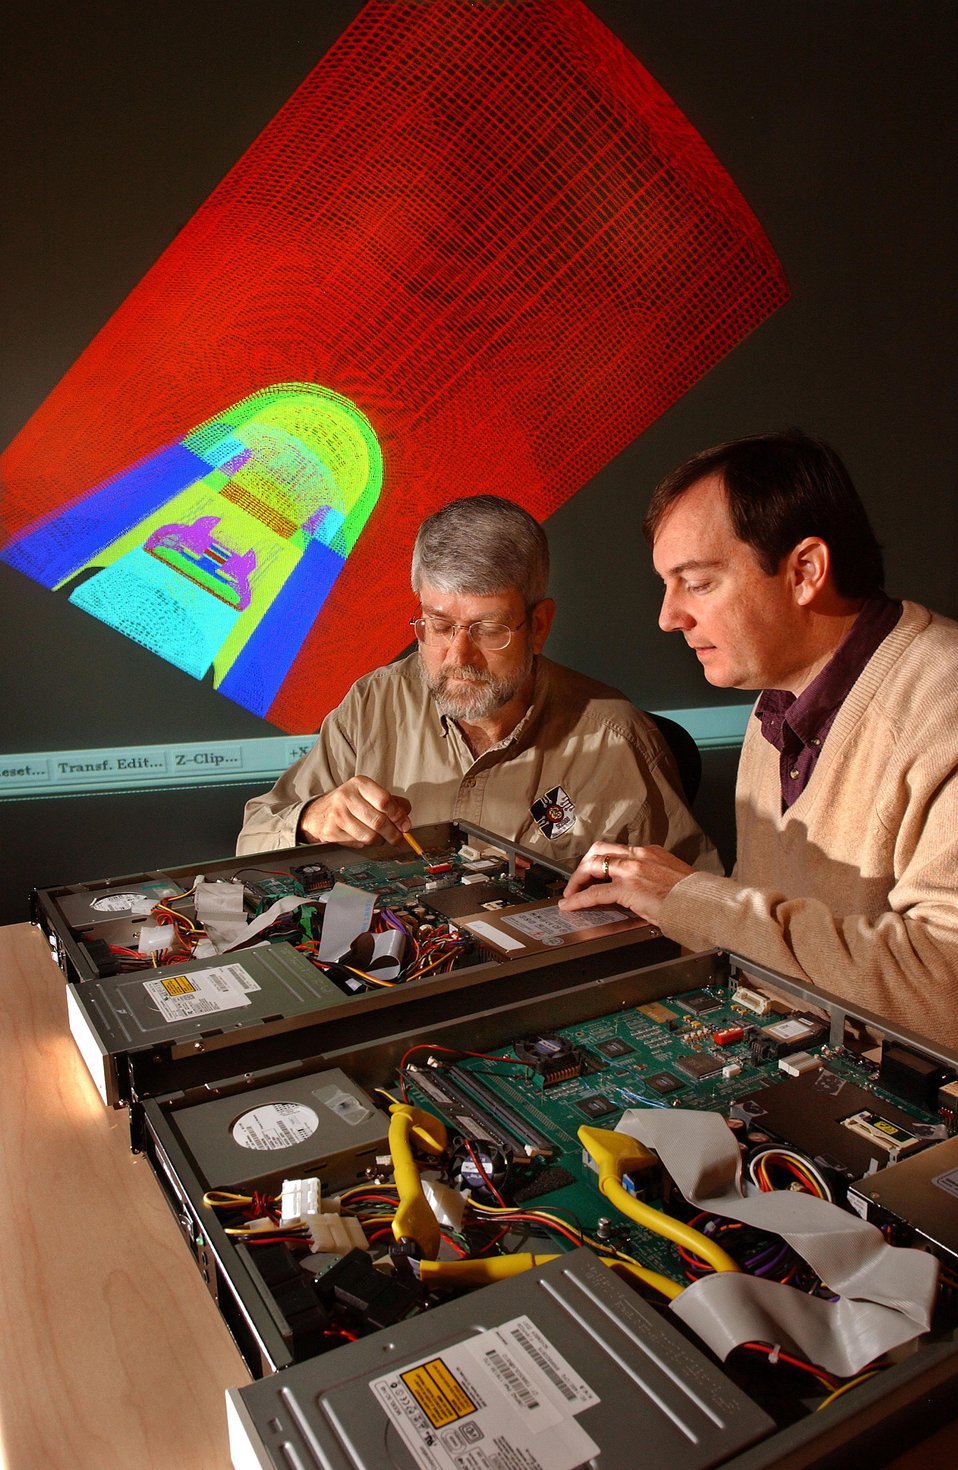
BE THERE NOW HARDWARE DEVELOPED AT SANDIA NATIONAL LABORATORIES.

SNL SCIENTISTS EXAMINE A VIDEO ENCODER AND DECODER, PART OF INTERACTIVE REMOTE-VISUALIZATION HARDWARE DEVELOPED AT SNL. THIS HARDWARE ALLOWS USERS AT PRIMARY AND REMOTE LOCATIONS TO VIEW AND MANIPULATE IMAGES BASED ON VERY LARGE DATA SETS AS THOUGH THEY WERE STANDING IN THE SAME ROOM. THEREFORE DOCTORS, ENGINEERS, MILITARY OFFICERS, OIL EXPLORATION TEAMS ETC. CAN INTERACT WITH COMPUTER-GENERATED IMAGES AT REMOTE LOCATIONS.